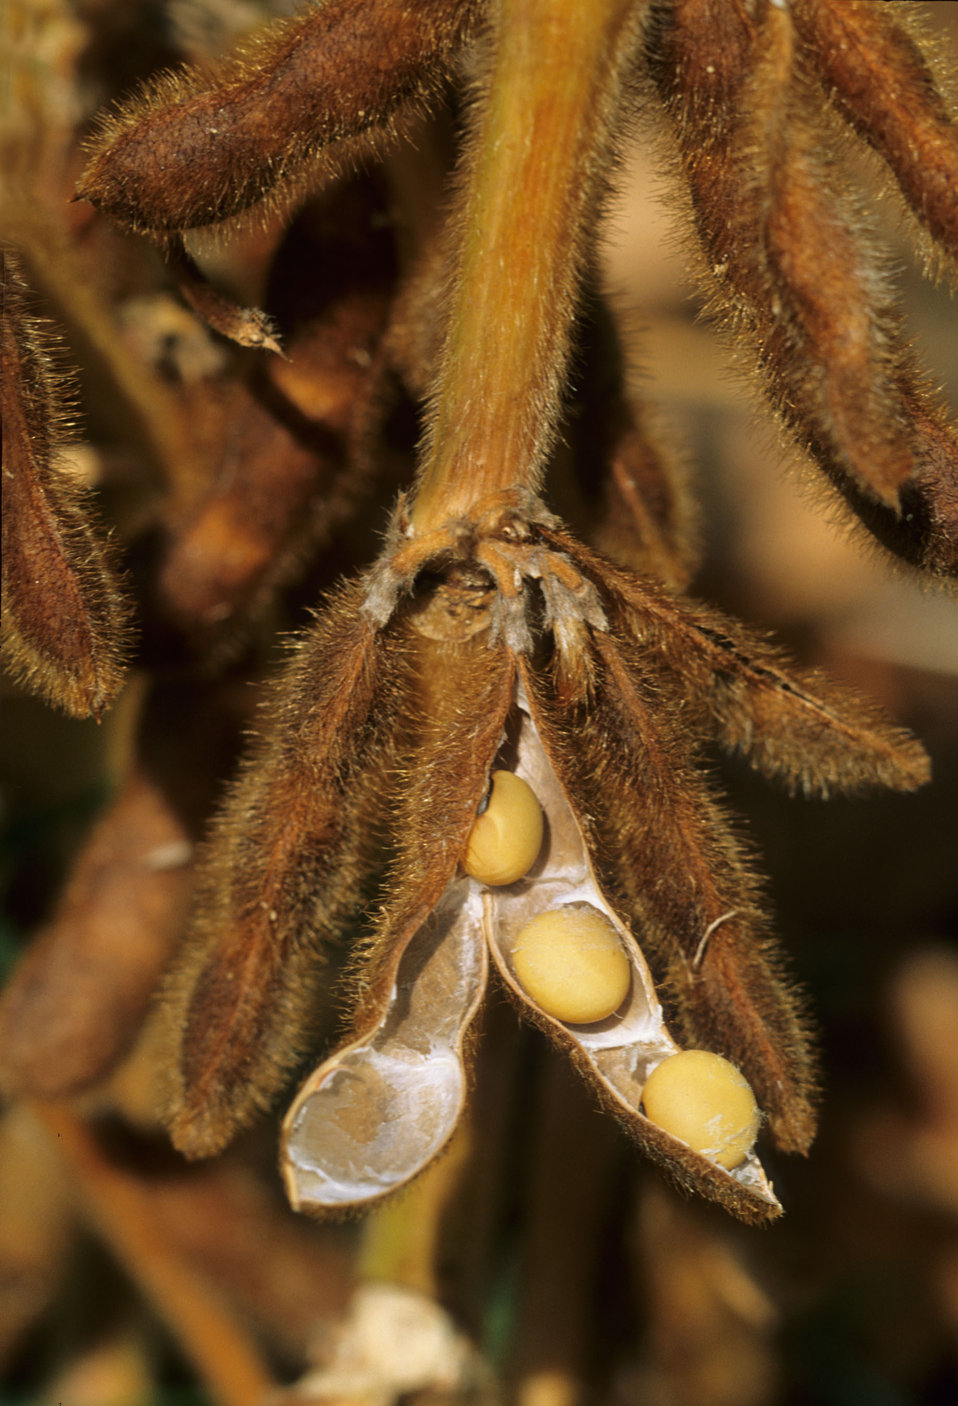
This image depicts mature soybeans. Most soybean varieties have the U.S. Department of Agriculture’s (USDA) Agriculture Research Service (ARS) in their pedigree. Agency scientists have released 66 varieties and 280 breeding lines between 1980 and August 1994.